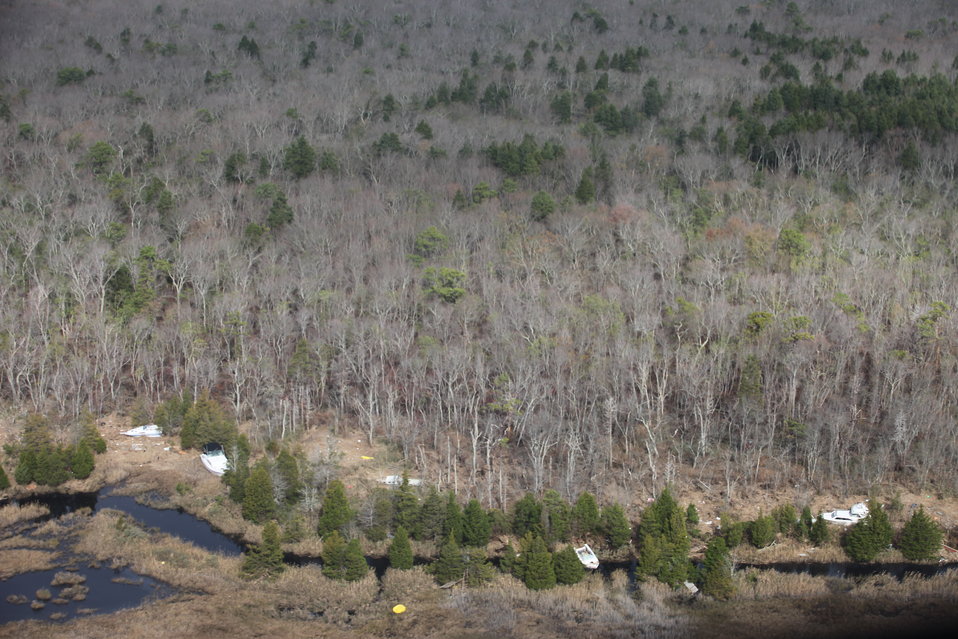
Boats washed ashore on Edwin B. Forsythe National Wildlife Refuge (NJ)

Aerial photo of E.B. Forsythe National Wildlife Refuge taken on 11/2/12.